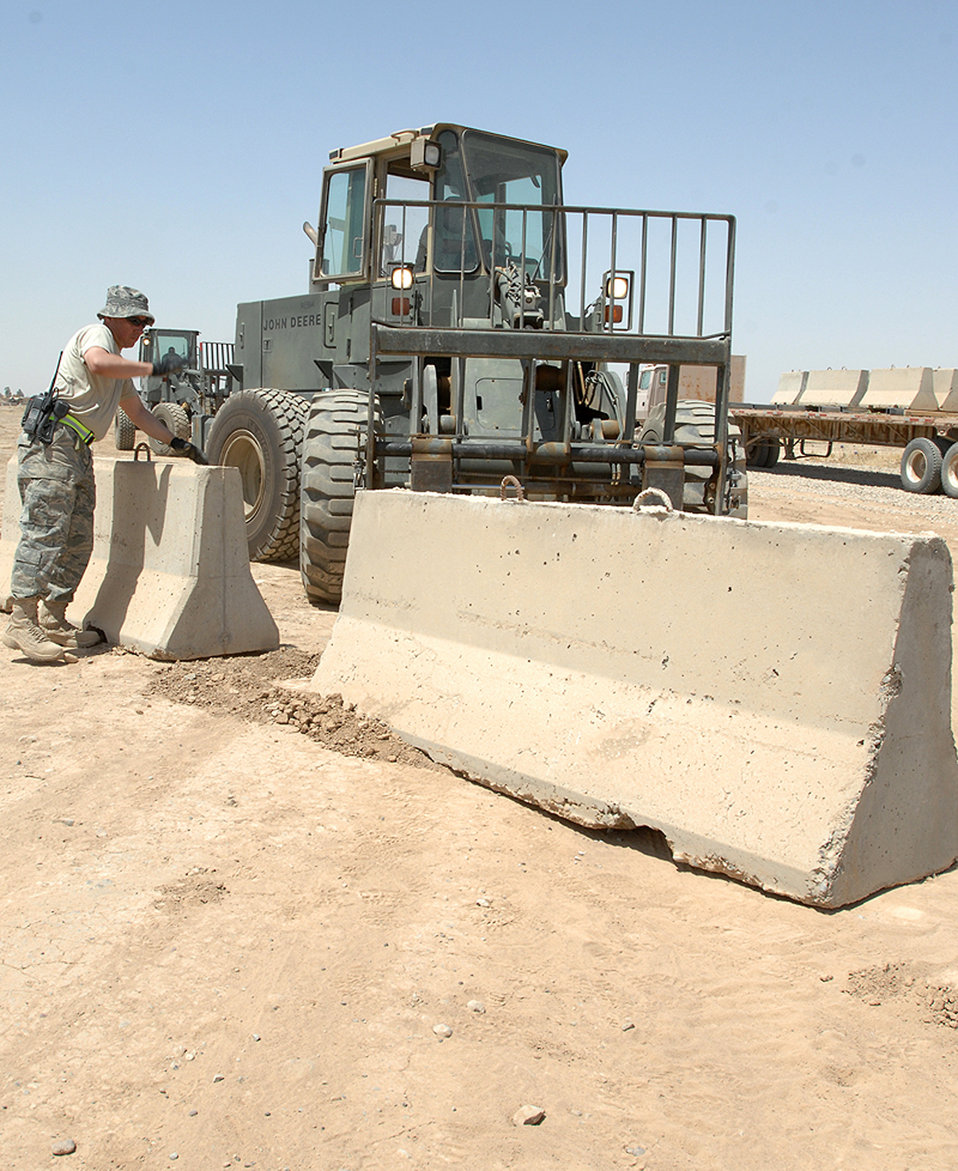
Kirkuk self-help project protects airfield assets, saves money

Senior Master Sgt. Ernesto Gonzalez directs the placement of jersey barriers June 4 at Kirkuk Air Base, Iraq. This was the first step in a self-help airfield-security project that saved an estimated $500,000 by using existing assets and volunteers. Sergeant Gonzalez is the 506th Expeditionary Logistics Readiness Squadron chief enlisted manager. He is a native of Pico Rivera, Calif., and deployed from March Air Reserve Base, Calif.